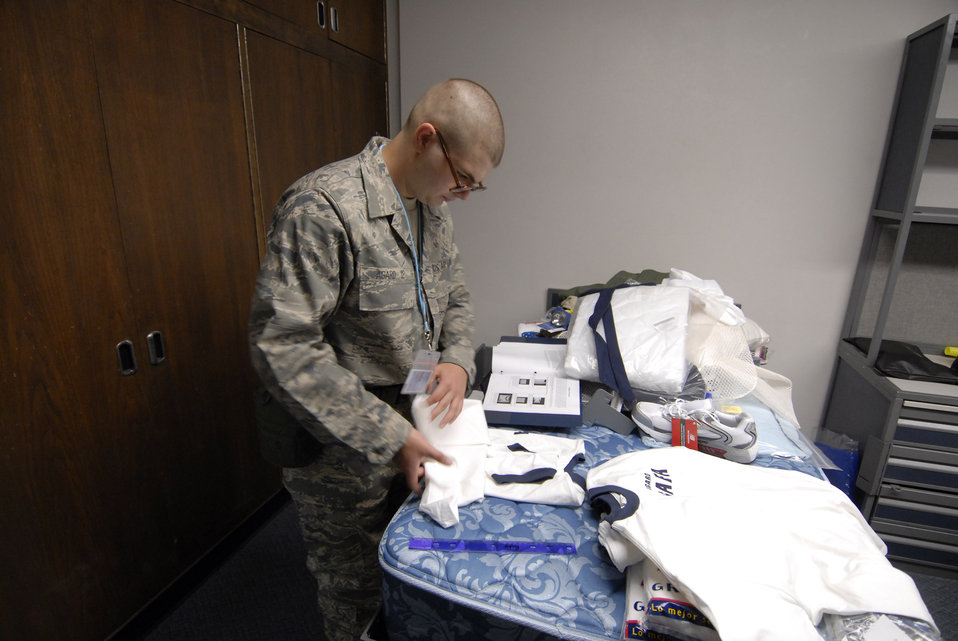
Class of 2012 Arrives

Basic Cadet Troy Agard folds his physical training T-shirts after he is assigned his dormitory room during the Class of 2012 inprocessing June 26 at the U.S. Air Force Academy, Colo. Inprocesing marks the start of 38 days of Basic Cadet Training, which is designed to prepare basic cadet trainees for entry into the cadet wing.